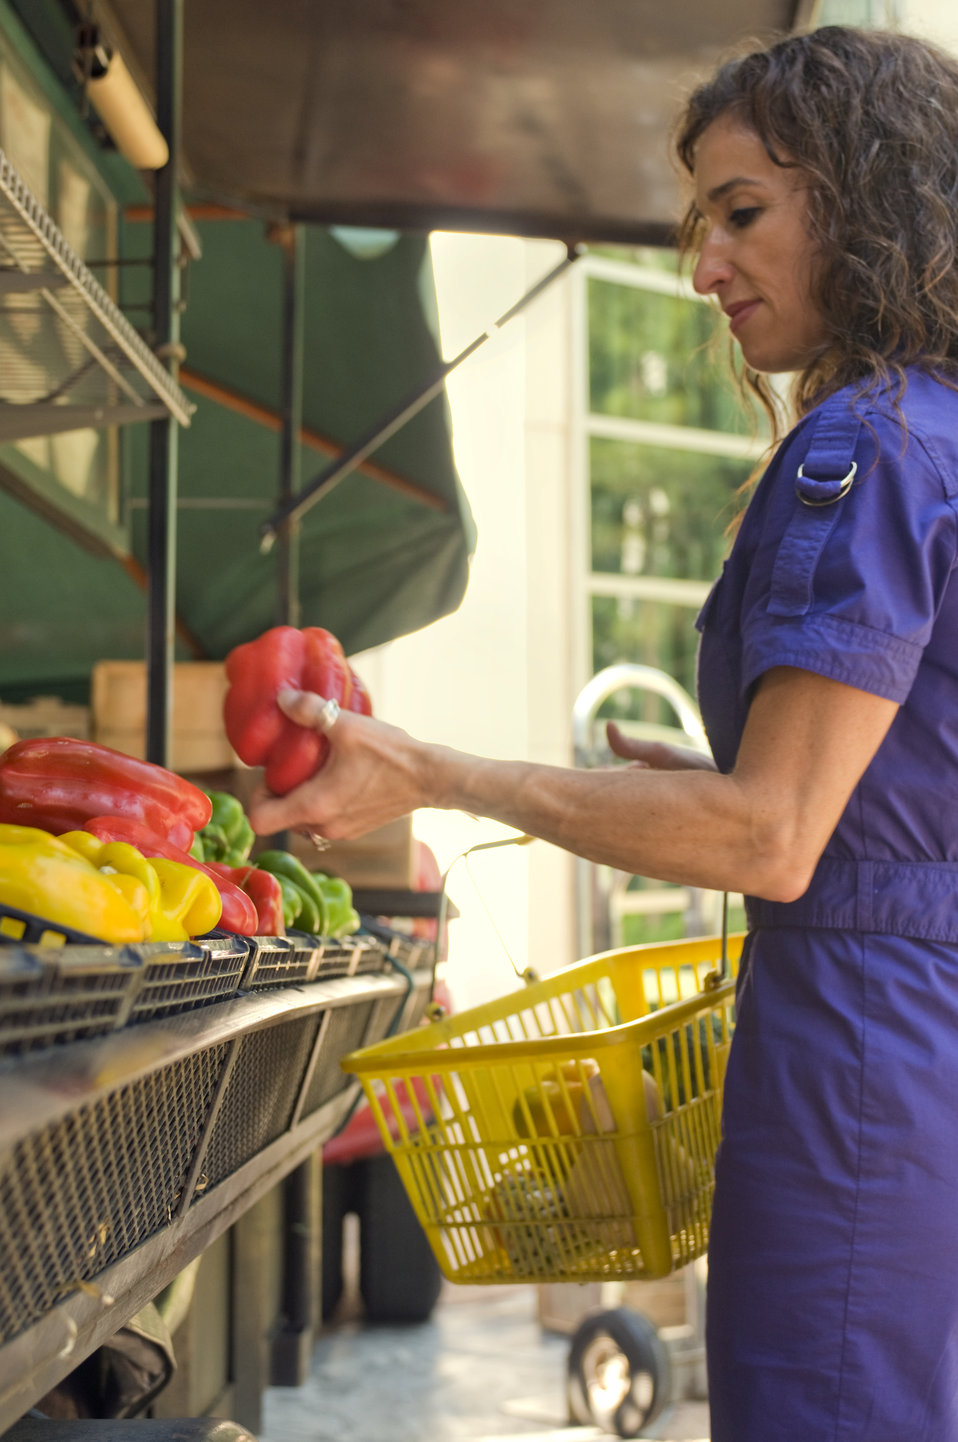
The woman pictured here was choosing an array of healthy fruits and vegetables at a mobile produce market, and placing her choices into a yellow plastic basket she'd held in her right hand. Here she was inspecting a bright red bell pepper, turning it around in her left hand, checking it for any external abrasions or bruising. Bell peppers are a mild pepper, high in its vitamins A and C, and a great colorful addition to any meal.